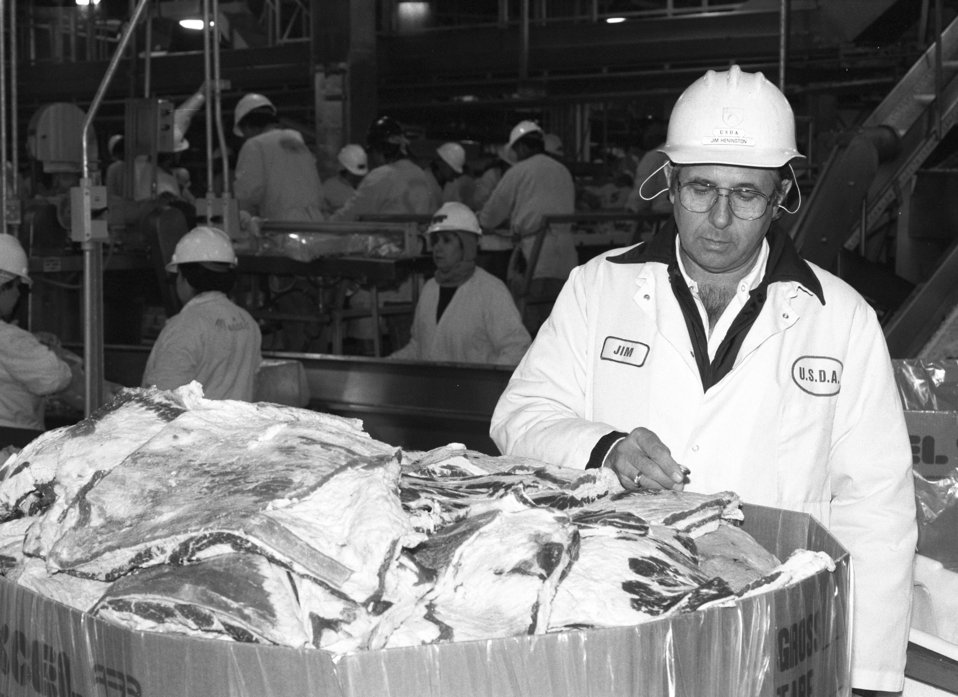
U.S. Department of Agriculture (USDA) Food Safety Inspection Service (FSIS) inspectors inspect beef using a Streamline Inspection System (SIS) at a processing plant in Plainview, TX on January 22, 1991.